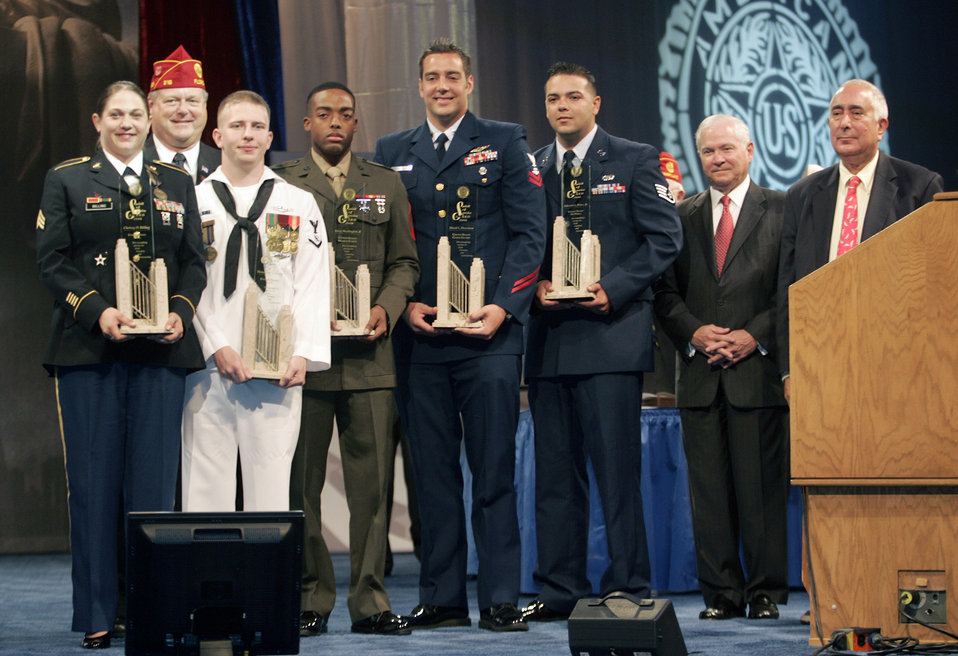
Spirit of Service Award

During The American Legion’s 92nd National Convention in Milwaukee, Wis., National Commander Clarence E. Hill (second from left) presented the Spirit of Service Award to Army Sgt. Chelsey D. Billing, Fort Belvoir, Va.; Navy Petty Officer 3rd Class Thomas M. Lothridge, USS Maryland, Naval Submarine Base Kings Bay, Ga.; Marine Sgt. Avery Washington II, Marine Corps Air Station Cherry Point, N.C.; Coast Guard Petty Officer 2nd Class David L. Downham, Coast Guard Air Station Atlantic City, N.J.; and Staff Sgt. Edward L. Perez, Keesler Air Force Base, Miss. Secretary of Defense Robert Gates and actor-entertainer Ben Stein also were on hand for the presentation.